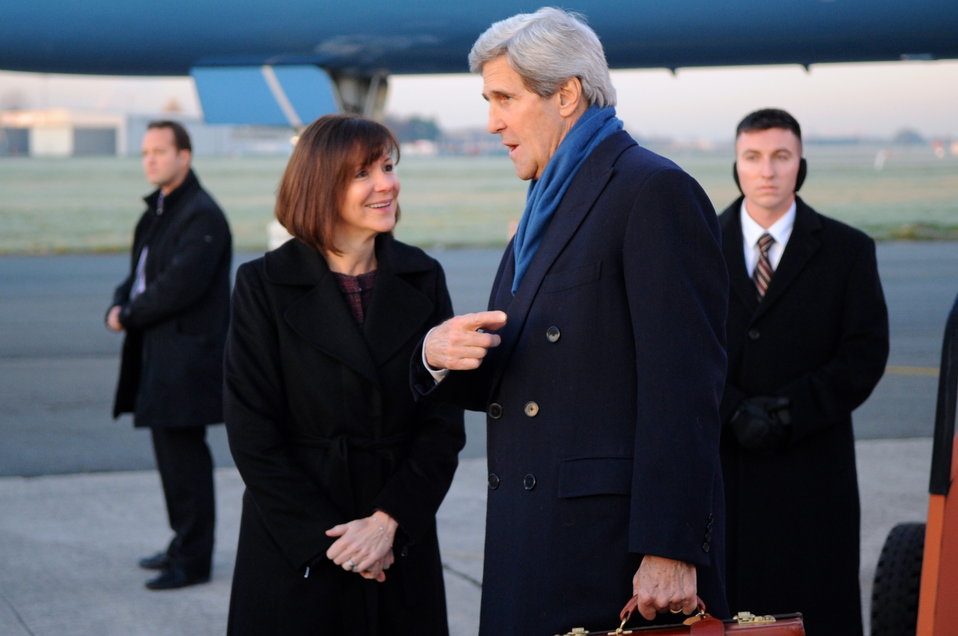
Secretary Kerry Chats With Ambassador Bauer

U.S. Secretary of State John Kerry chats with U.S. Ambassador to Belgium Denise Bauer after arriving in Brussels, Belgium, for NATO Ministerial meetings on December 3, 2013.